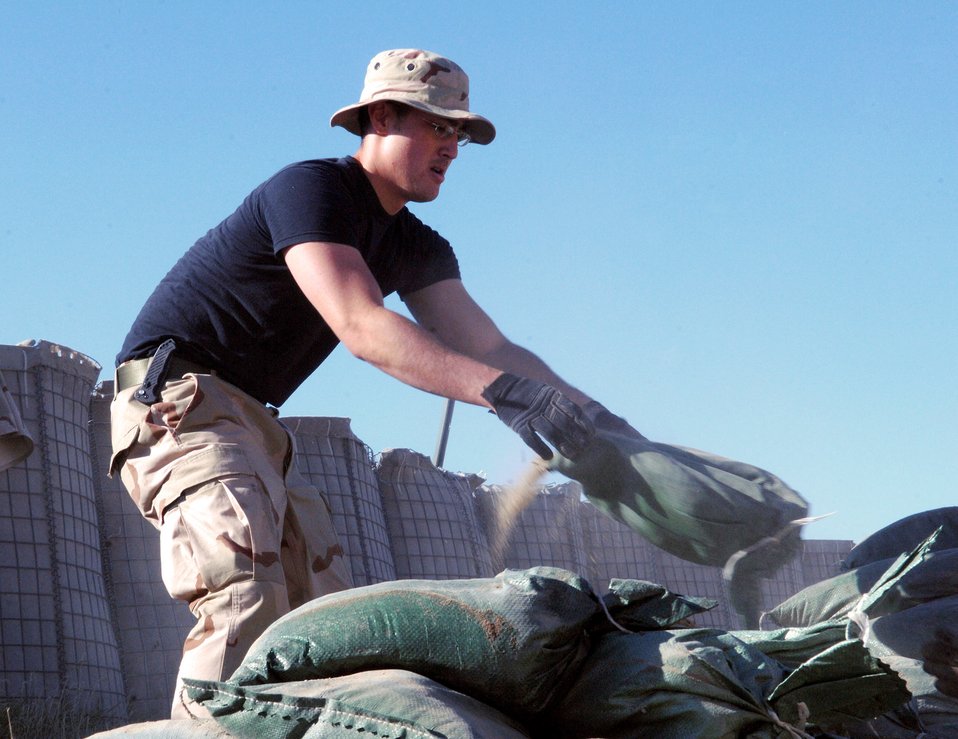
Airmen prepare Afghanistan camp for new living quarters

Senior Airman Bradley Luu removes sandbags in preparation for an upgrade to the deployed Airmen's living quarters on Camp Cunningham May 22 at Bagram Airfield, Afghanistan. The existing B-Huts the Airmen live in will be relocated to this area to make way for sturdier relocatable buildings. Airman Luu is assigned to the 455th Expeditionary Communications Squadron and deployed from Cannon Air Force Base, N.M.